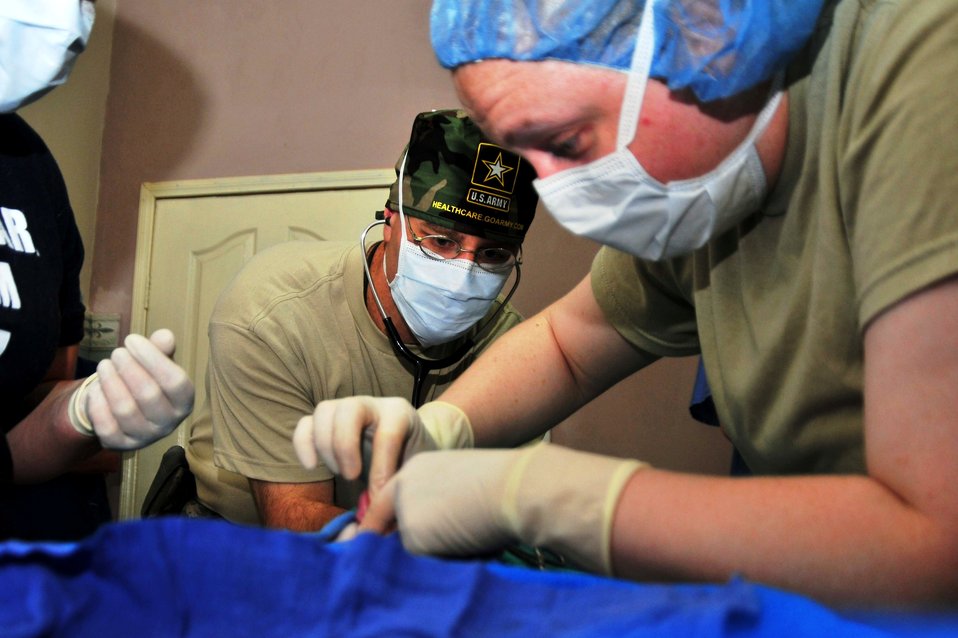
Veterinarian Army Capt. (Dr.) Eric Storey Anesthetizes a Feline Veterinary Patient

U.S. Army Capt. (Dr.) Eric Storey, a veterinarian from the 994th Medical Detachment, anesthetizes a feline veterinary patient before his team partners with a Cambodian veterinarian to share their surgical techniques during a veterinarian community service event in support of Pacific Partnership 2010 on June 25, 2010, in Sihanoukville, Cambodia. The Military Sealift Command hospital ship USNS Mercy (T-AH 19) is in Cambodia conducting the fifth in a series of annual U.S. Pacific Fleet humanitarian and civic assistance endeavors to strengthen regional partnerships.